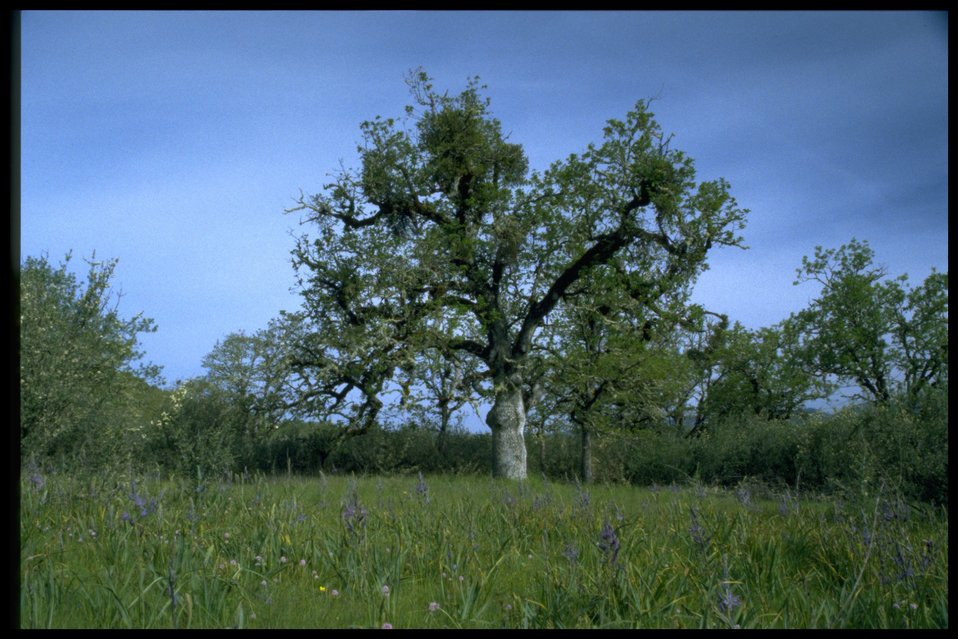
Farshot of Quercus garryana with Phorodendron vilosum, Camassia Quamash, Plectritis congesta, and Ranunculus occidentalis.